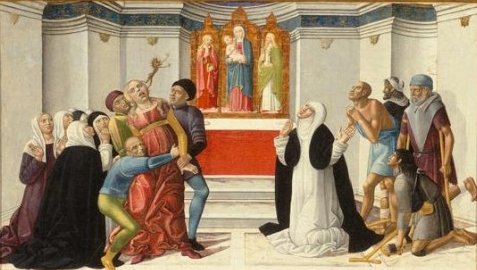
'St. Catherine of Siena Exorcising a Possessed Woman', painting by Girolamo di Benvenuto